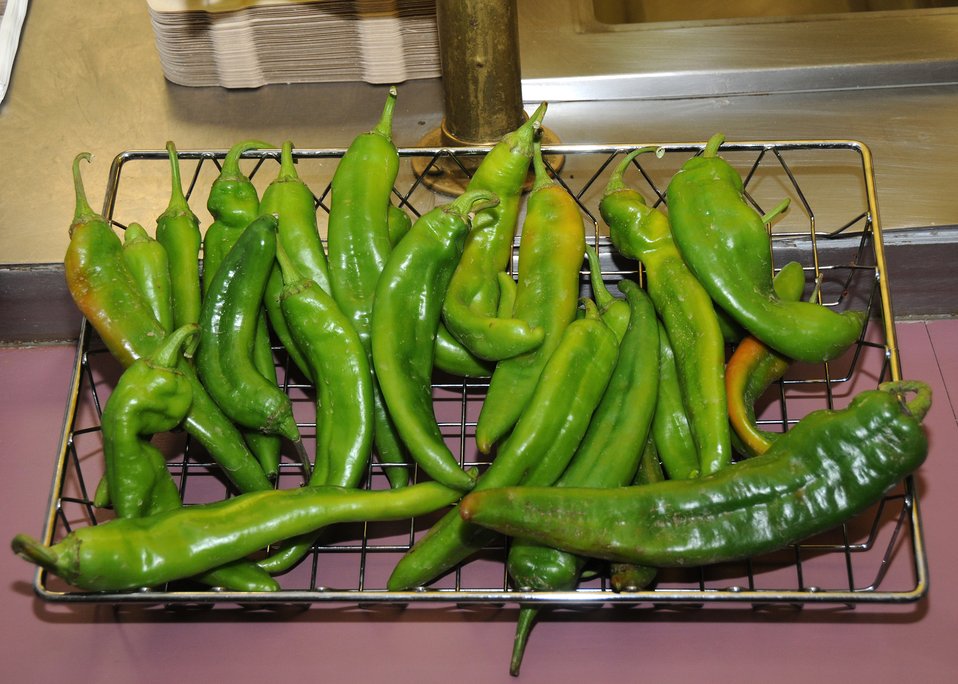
A basket of New Mexico Green Chiles are displayed in the south building cafeteria on Thursday, Sep. 2, 2010 in honor of the kick off event for New Mexico Green Chile month at the U. S. Department of Agriculture in Washington, DC. USDA photo 10di1486-12.